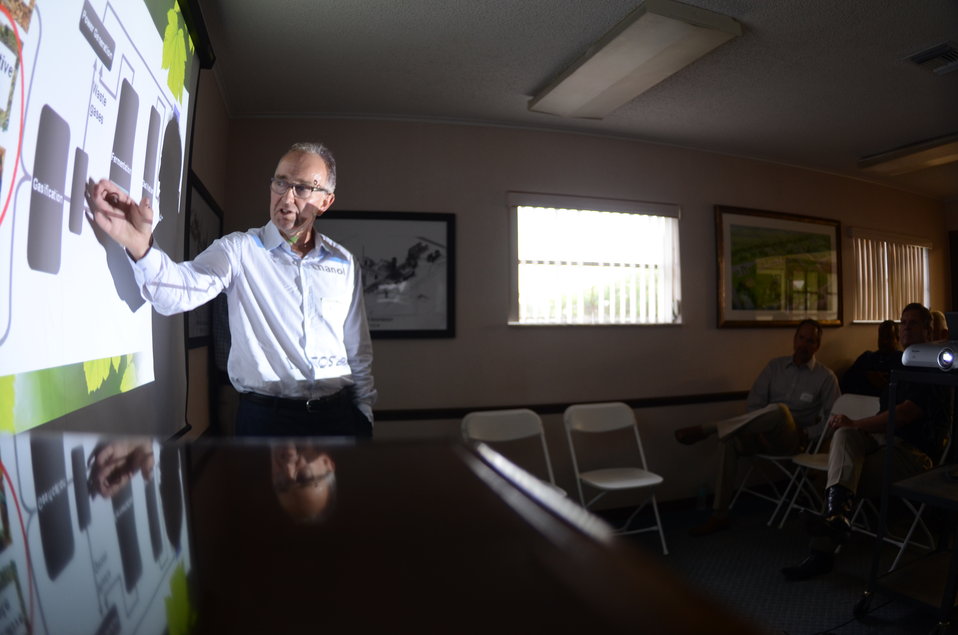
INEOS representative explains the waste-to-energy INEOS bioprocessing facility to Agriculture Secretary Tom Vilsack in Florida, on Thursday, Aug. 11, 2011. The INEOS New Planed BioEnergy facility in Vero Beach, Florida, was granted a conditional Agriculture loan guarantee earlier this year to help build and operate a biorefinery capable of producing 8 million gallons per year of cellulosic ethanol and 6 megawatts of electricity.